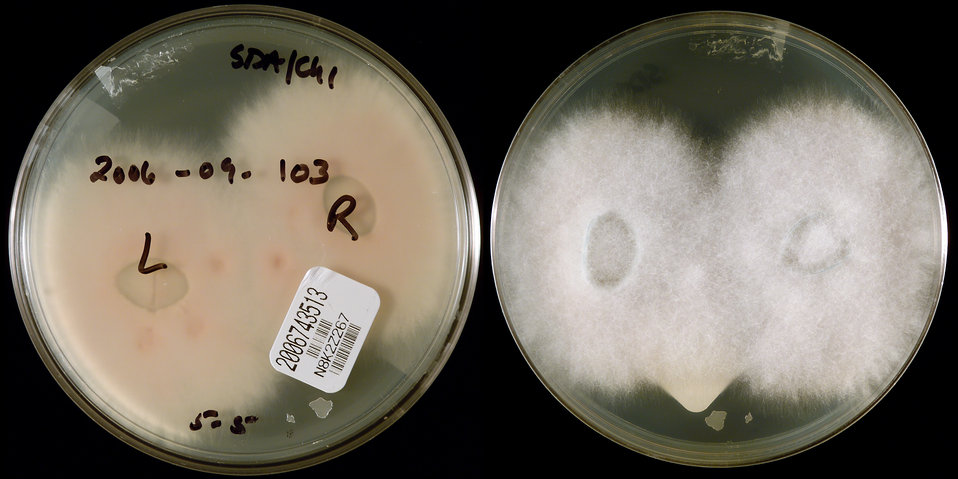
This image depicted two sides of a Petri dish, which had been inoculated with specimens consisting of the right and left contact lenses, visible on the culture medium, obtained from a Connecticut Fusarium keratitis-patient, and had subsequently grown a filamentous colony of Fusarium oxysporum fungal organisms. The type of agar medium in the case of this specimen was Sabouraud Dextrose (SAB). While it is not unusual for Fusarium to cause keratitis, it was the number of affected individuals, which had increased dramatically, predominantly in persons wearing contact lenses, that had warranted this epidemiologic study. The laboratory received cultures which came from two sources: Fusarium spp. isolated from the eyes of patients with fungal keratitis, and cultures from contact lenses, cases and/or lens solution.